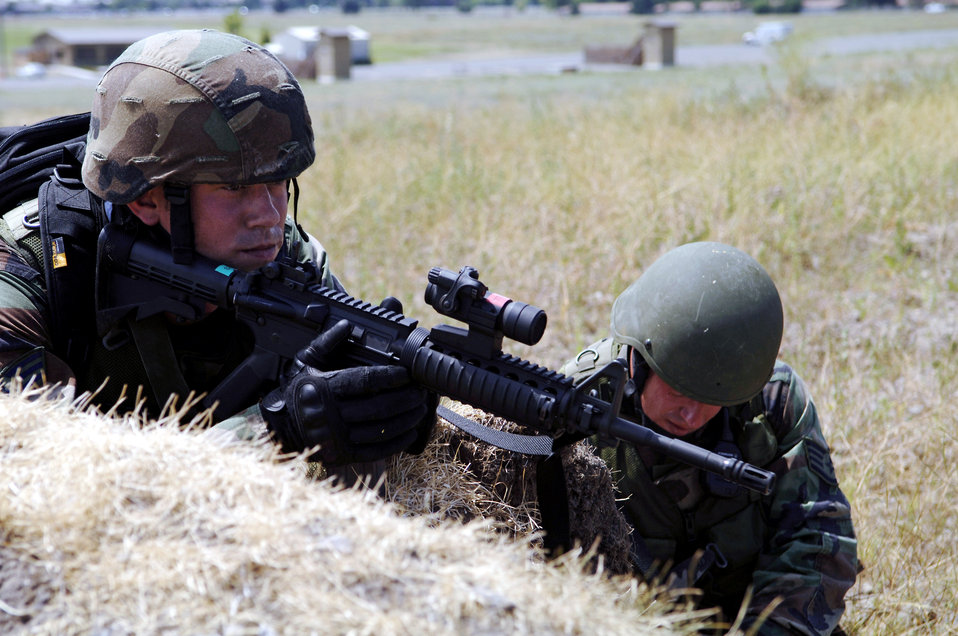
Security forces team trains for Rodeo

Senior Airman Lonnie Bell watches for enemy forces while Staff Sgt. Levi Wilson documents coordinates on a map during a practice session July 13 at Fairchild Air Force Base, Wash. The Airmen are training for the Air Mobility Command Rodeo 2007 at McChord AFB, Wash., being held at the end of July.